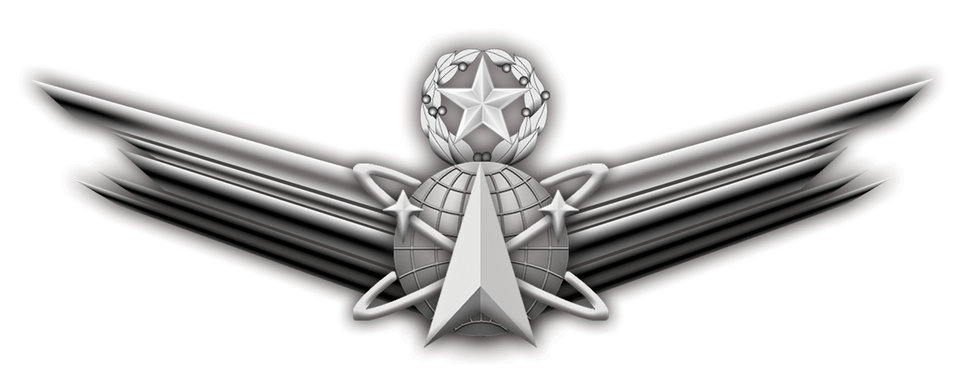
Officials unveil new space badge

PETERSON AIR FORCE BASE, Colo. -- The master-level space badge, like other Air Force badges, will include a senior version with a star only and a basic version with no star or wreath. The badge and qualification criteria are pending formal approval and will be announced at a later date.